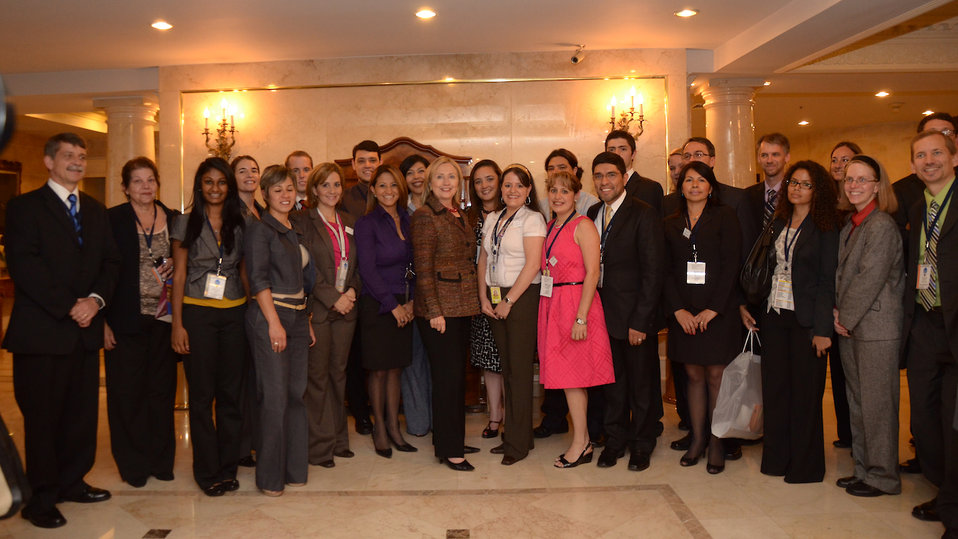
Secretary Clinton Poses for a Photo With U.S. Delegation to SICA

U.S. Secretary of State Hillary Rodham Clinton poses for a photo with the U.S. delegation to the Central American Security Conference (SICA) in Guatemala City, Guatemala, on June 22, 2011.